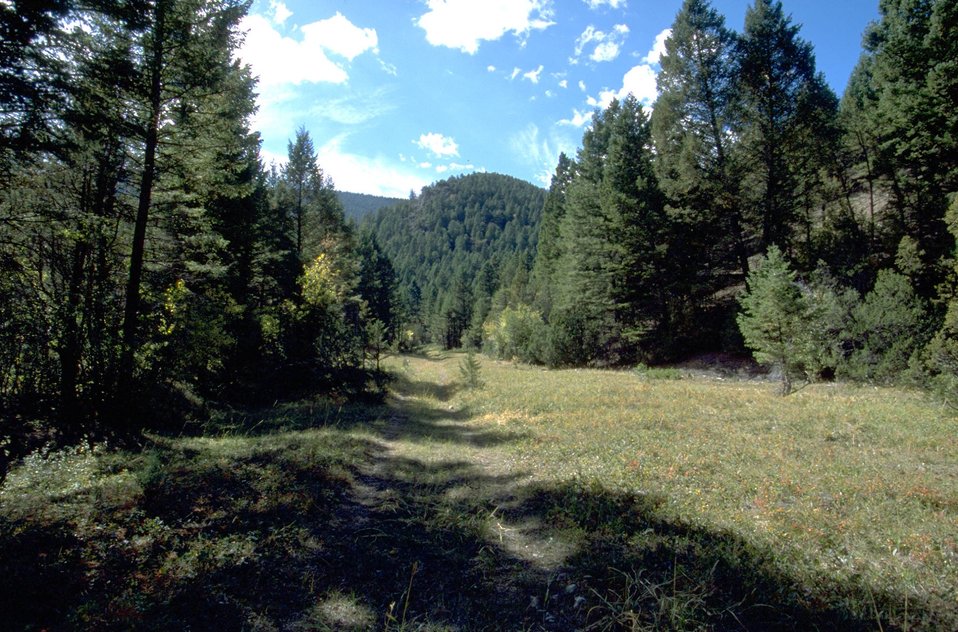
Two-Track Trail in Lauren Canyon